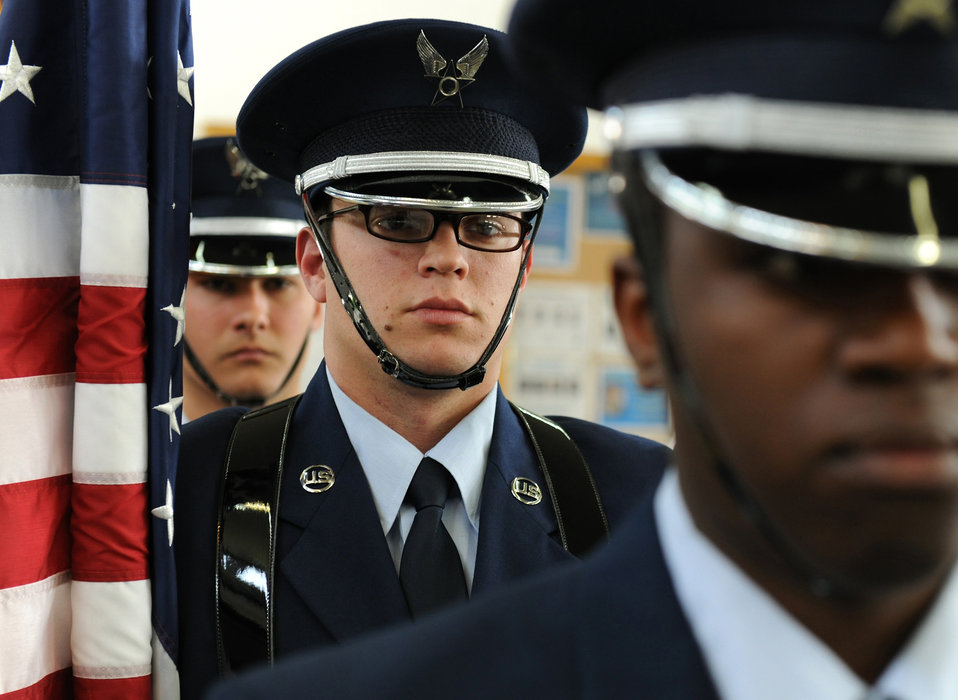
Honor guard

Members of the 52nd Fighter Wing Honor Guard prepare to present the colors at a retirement ceremony April 22, 2011, at Spangdahlem Air Base, Germany.